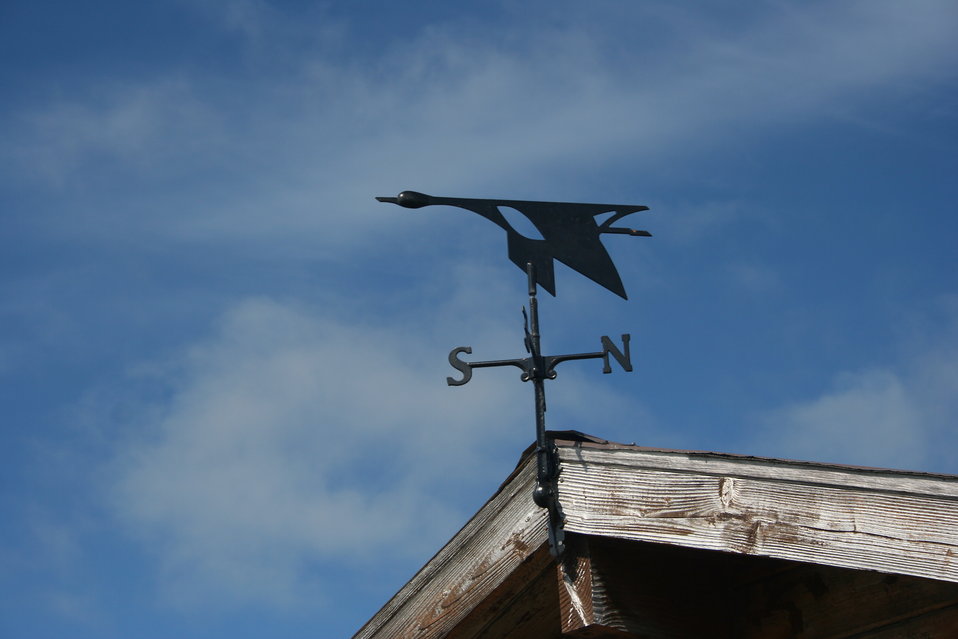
Weather is always on our mind

The weather can change in a matter of minutes. Strong winds, low visibility, and rain all have potential to shut down an operation.

USFWS Yukon Delta NWR